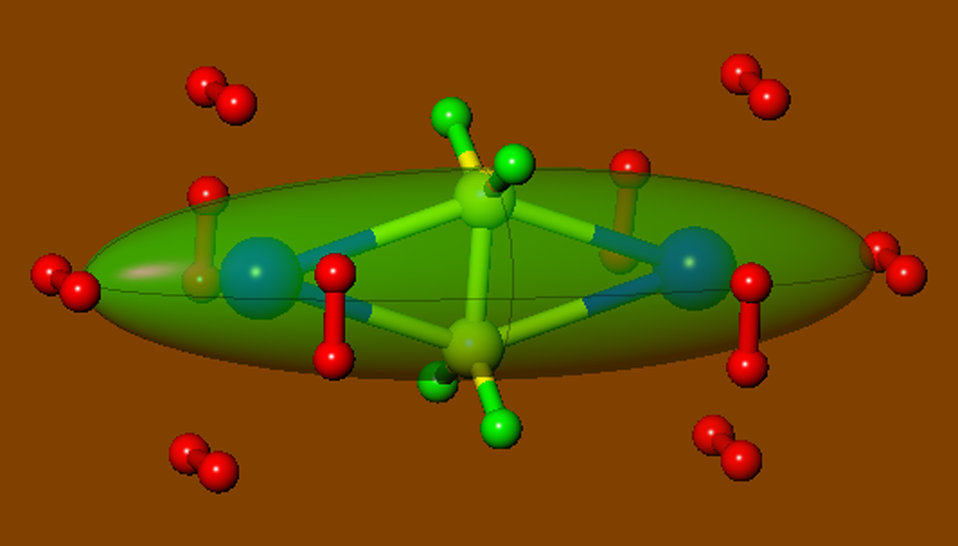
Ethylene Suggested For Hydrogen Storage

Results of modeling studies indicate that attaching titanium atoms (blue) to the ends of an ethylene molecule (yellow-green) will result in a capsule-shaped complex that absorbs 10 hydrogen molecules (red). The results open a new avenue in the pursuit of materials that will enable efficient solid-state storage of hydrogen.